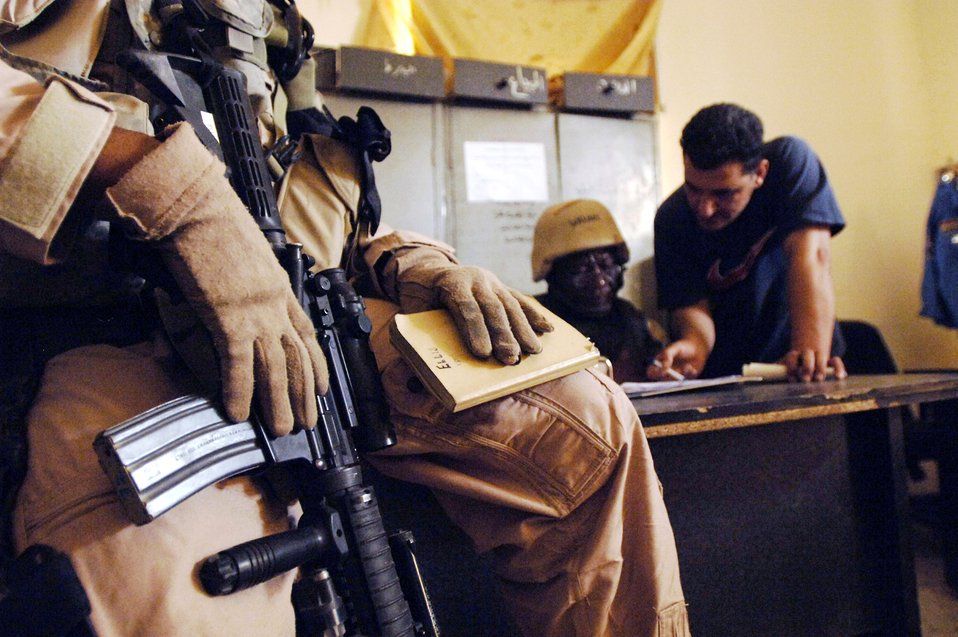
Dangerous road to progress

Staff Sgt. Michael Ellis waits while his co-worker discusses investigative issues with an Iraqi police official May 9 in a Baghdad police station. Members of Det. 3, 732nd Expeditionary Security Forces Squadron, perform police transition team duties of mentoring, coaching and teaching Iraqi police.